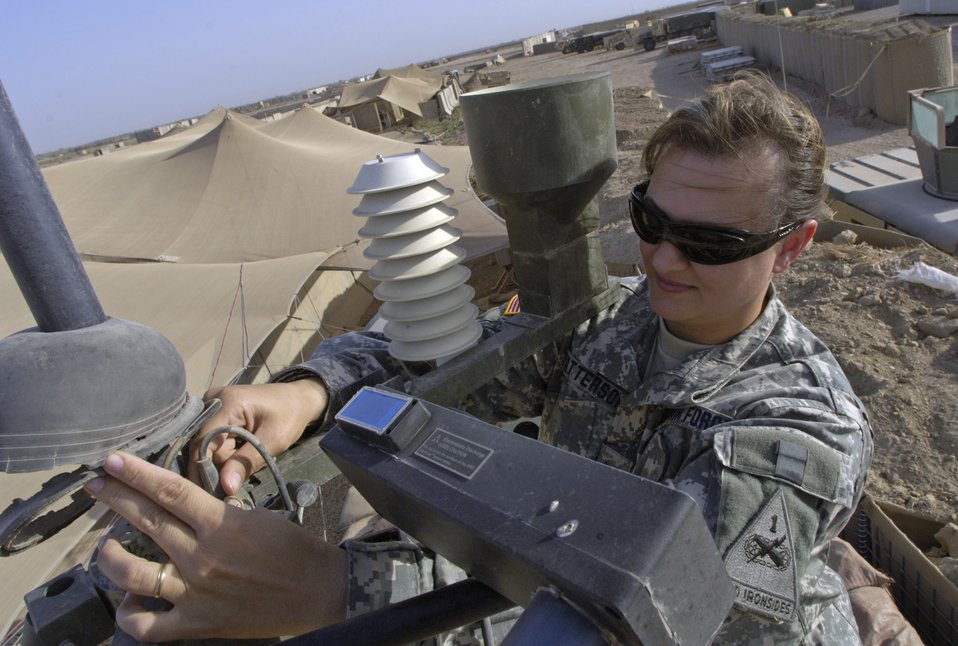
Weather team acclimates to mission in southern Baghdad

Tech. Sgt. Andrea Patterson performs her daily maintenance routine on a tactical meteorological operating system June 23 at Forward Operating Base Kalsu, Iraq. Sergeant Patterson and two other Air Force weather forecasters provide 24-hour-a-day weather updates to the Army 3rd Infantry Division's operations occurring in the Triangle of Death area. The instantaneous weather information the battlefield weathermen are able to provide are critical to the success, and to the safety of the 3rd ID's ground and aviation operations. Though Sergeant Patterson is attached to the 3rd ID, she officially falls under the recently formed 3rd Expeditionary Weather Squadron headquartered on Camp Victory in Iraq. She is deployed from Detachment 6 of the 7th Weather Squadron from Wiesbaden, Germany.